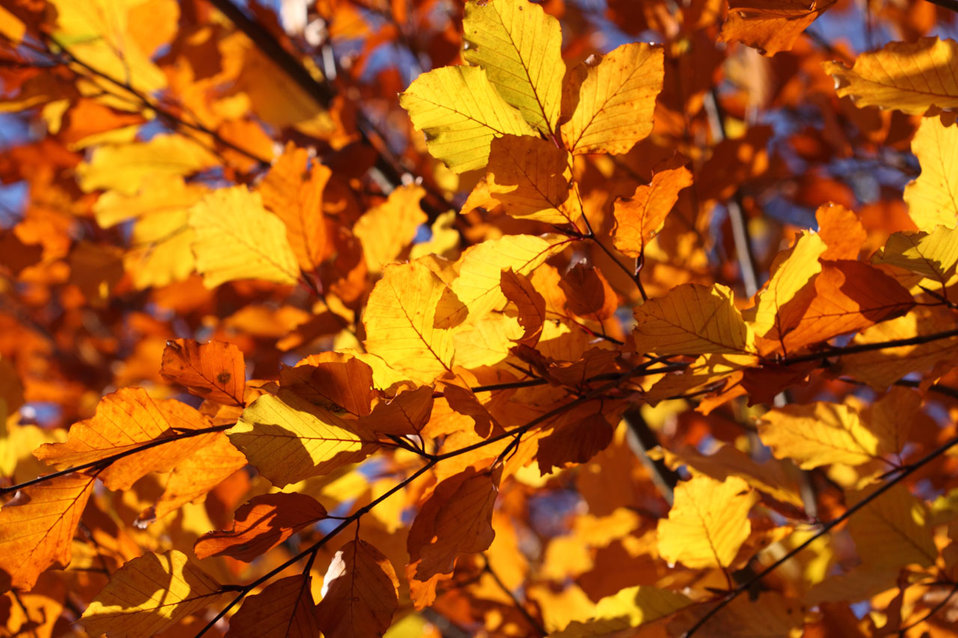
Yellow leaves

Sun shining through yellow leaves.